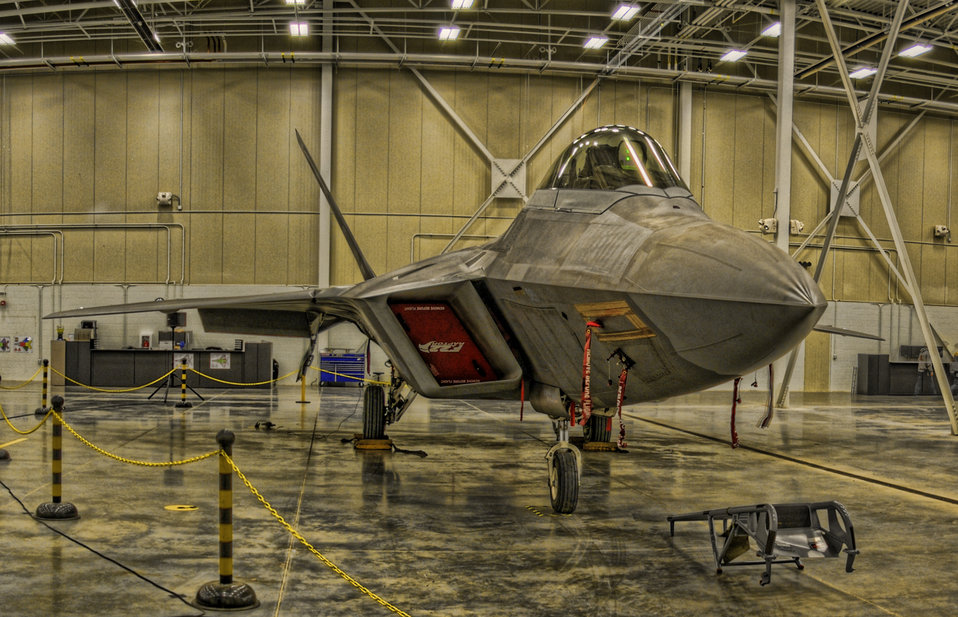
F-22 heavy maintenance facility at Hill Air Force Base

A U.S. Air Force F-22 Raptor provides the backdrop at a ribbon-cutting ceremony for the new F-22 heavy maintenance facility at Hill Air Force, Utah, Jan. 12, 2012. The U.S. Army Corps of Engineers Sacramento District oversaw construction of the $45 million, 96,000-square-foot facility; the second and final phase of a two-phase complex on the base. The first phase, a $39.2 million facility, was completed in August 2010.